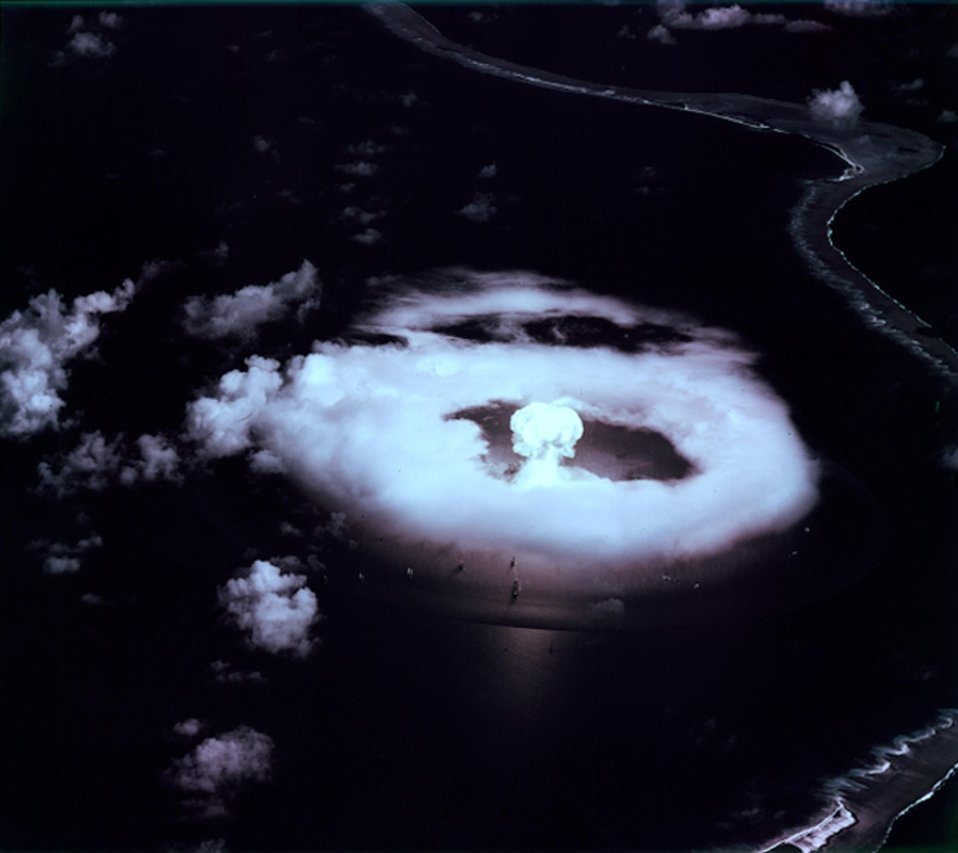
'A-Day' First atomic bomb explosion at Bikini in the Marshall Islands 1 July 1946.